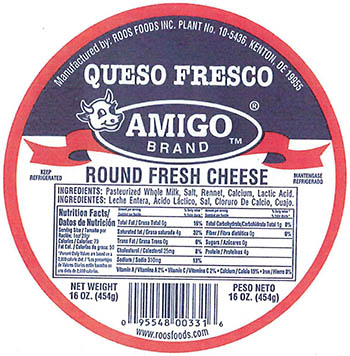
RECALLED – Variety of cheeses

February 23, 2014 – Product Recall – Roos Foods Voluntarily Recalls Variety of Cheeses (listed below) Due to Possible Health Risk.